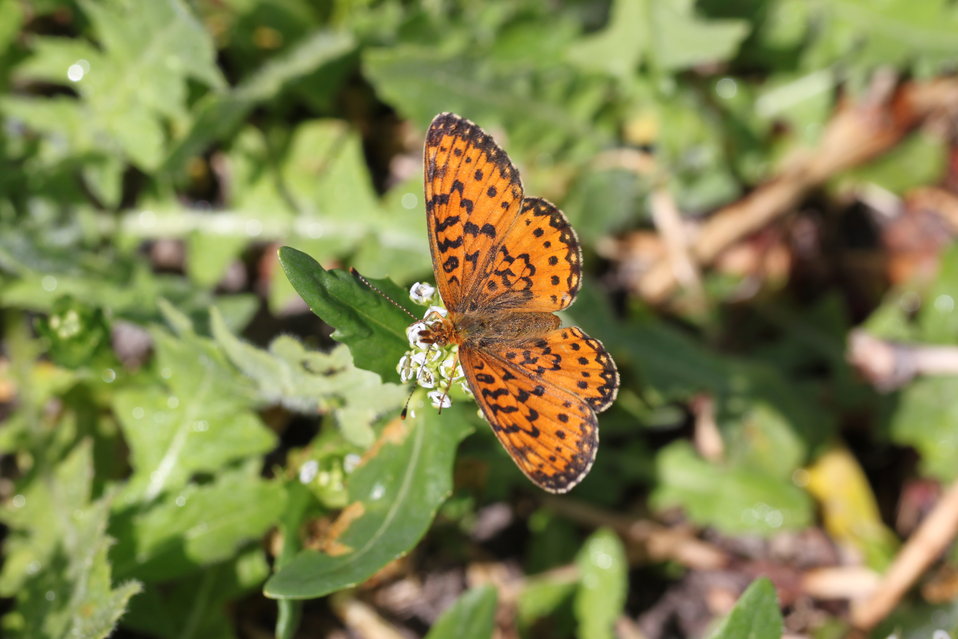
Silver-bordered Fritillary

Boloria selene nectaring in thick wetland vegetation.